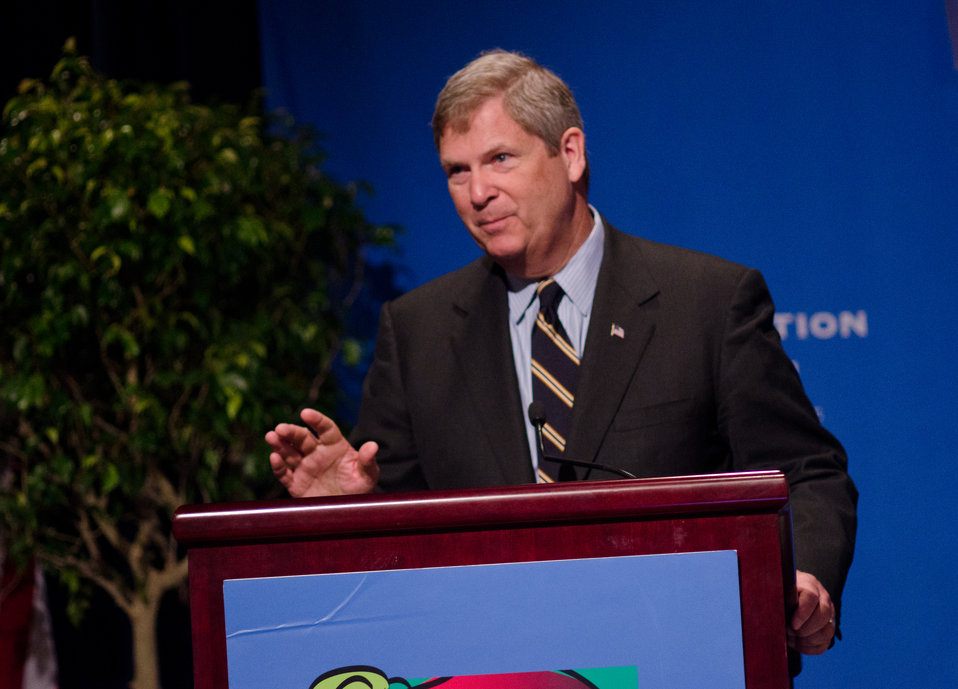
U.S. Department of Agriculture Secretary Tom Vilsack spoke with and took questions during the School Nutrition Association’s closing general session of their 39th annual Legislative Action Conference at the J.W. Marriott Hotel in Washington, D.C., on Wednesday, March 9, 2011. The theme of the Secretary Vilsack’s speech was “The Realities of Implementing New Meal Patterns and Operational Requirements.” Of the many things he spoke about, he also shared with the audience how his motivation came from how personally important it was to him, that his adopted mother made a lunch for him everyday he went to school despite the challenges of her alcoholism and family struggles. He also talked about the Healthy, Hunger-Free Kids Act of 2010 (Public Law 111-296 and how chefs were involved in the development of the USDA’s proposed updated nutrition standards for school meals development.